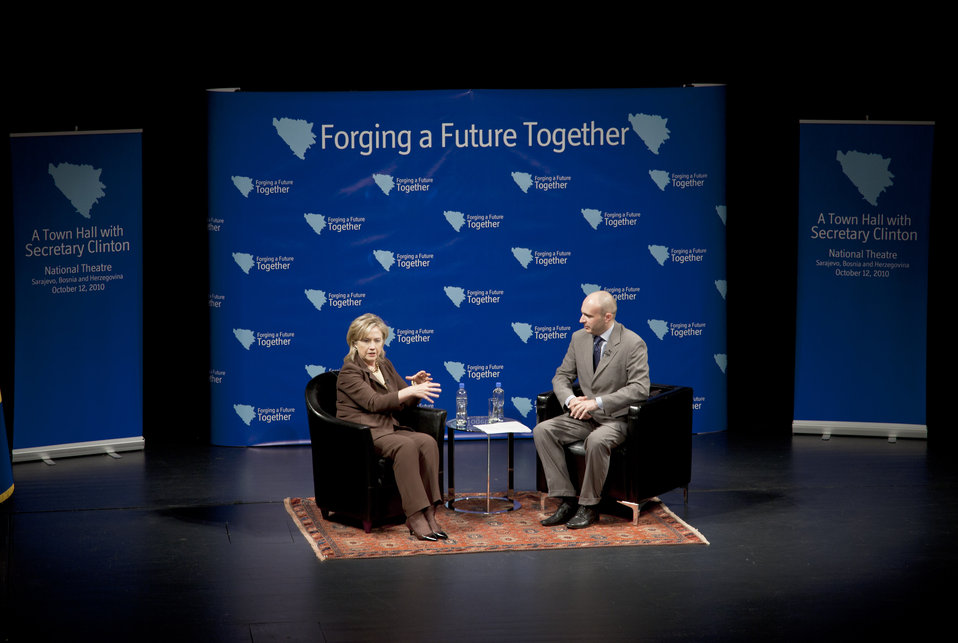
Secretary Clinton Participates in a Town Hall

U.S. Secretary of State Hillary Rodham Clinton participates in a town hall meeting with university students and civil society representatives, at the National Theater, in Sarajevo, Bosnia and Herzegovina, on October 12, 2010.